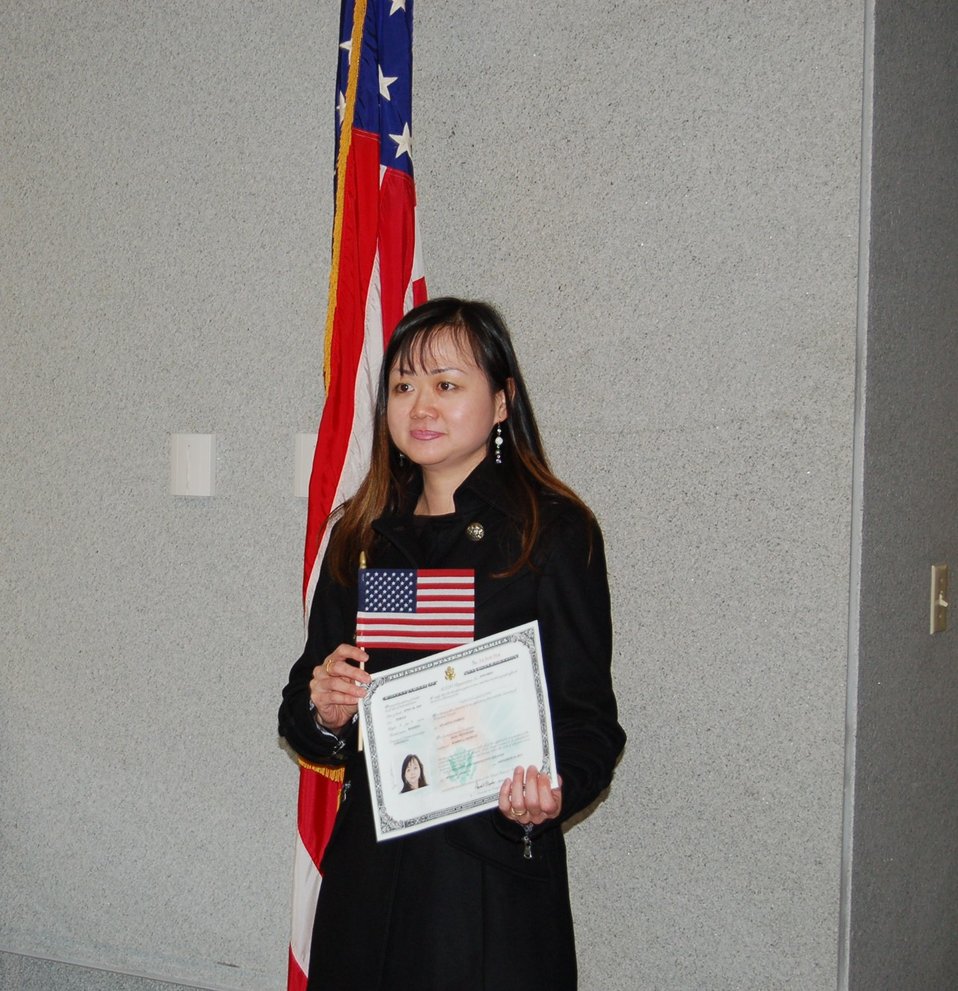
New Citizens